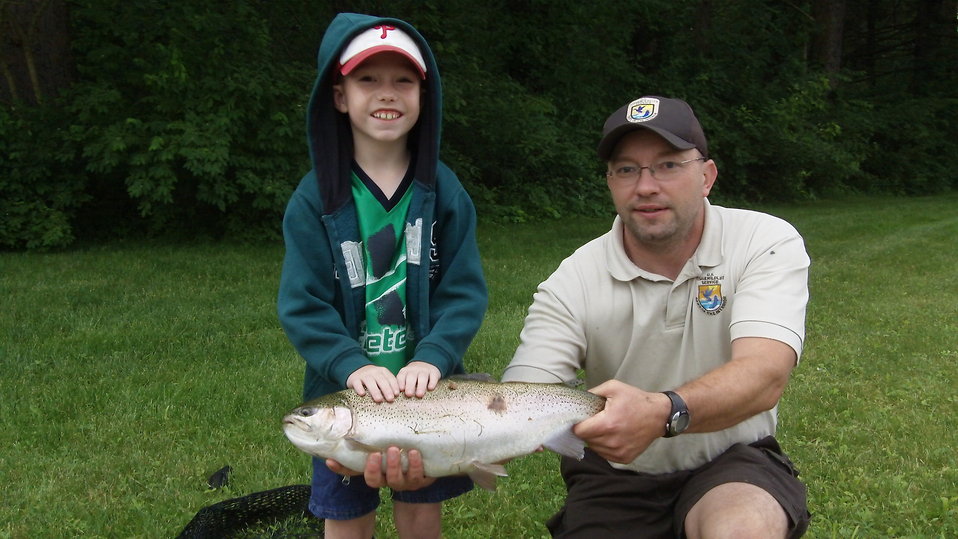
Northeast Fishery Center's Annual Fishing Event

Boy and Service employee hold their catch at the Northeast Fishery Center's annual fishing event in Lamar, PA.